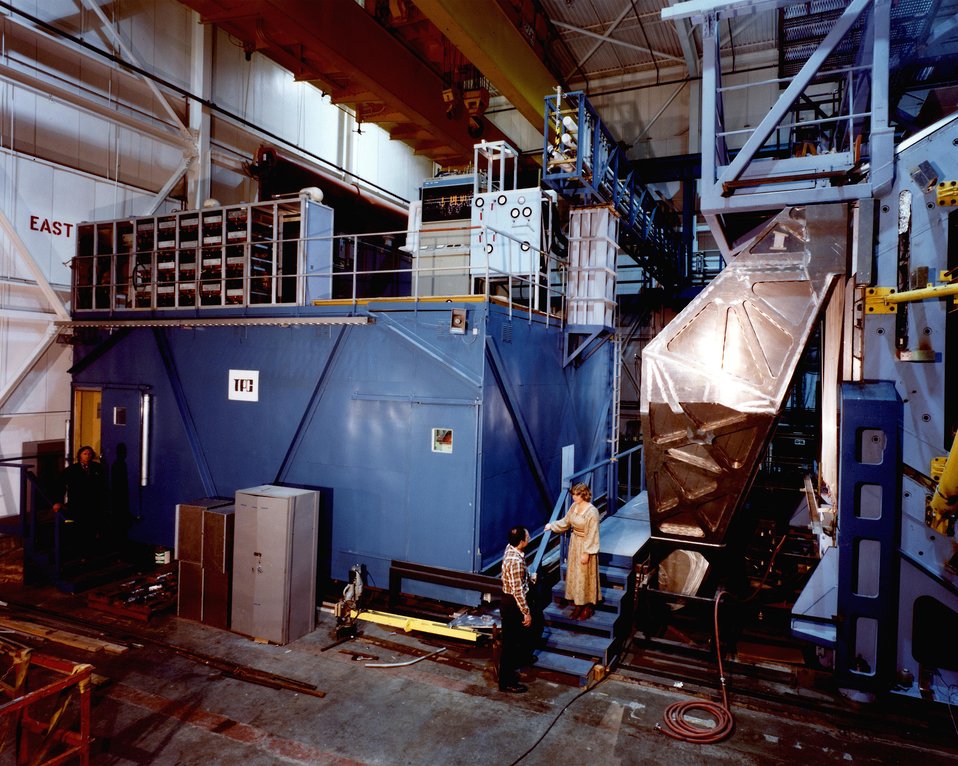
THE ELECTRONICS HOUSING AND CABLE TRAYS BESIDE THE HEXAGONAL FRAMEWORK OF THE TIME PROJECTION CHAMBER.

THE POSITRON-ELECTRON PROJECT (PEP) IS A JOINT UNDERTAKING OF STANFORD LINEAR ACCELERATOR CENTER (SLAC) AND THE LAWRENCE BERKELEY LABORATORY (LBL). THE PEP MACHINE IS DESIGNED TO STORE BEAMS OF ELECTRONS AND POSITRONS CIRCULATING IN OPPOSITE DIRECTIONS AT SINGLE-BEAM ENERGIES BETWEEN 4 GEV AND 18 GEV. THE SOURCE OF THE BEAMS WILL BE THE PRESENT SLAC ACCELERATOR. THE COUNTER-ROTATING BEAMS OF ELECTRONS AND POSITRONS WILL COLLIDE WITH EACH OTHER AT SIX POINTS IN THE MACHINE. THESE COLLISION OR BEAM-INTERACTION POINTS WILL BE USED FOR HIGH-ENERGY PHYSICS EXPERIMENTS.